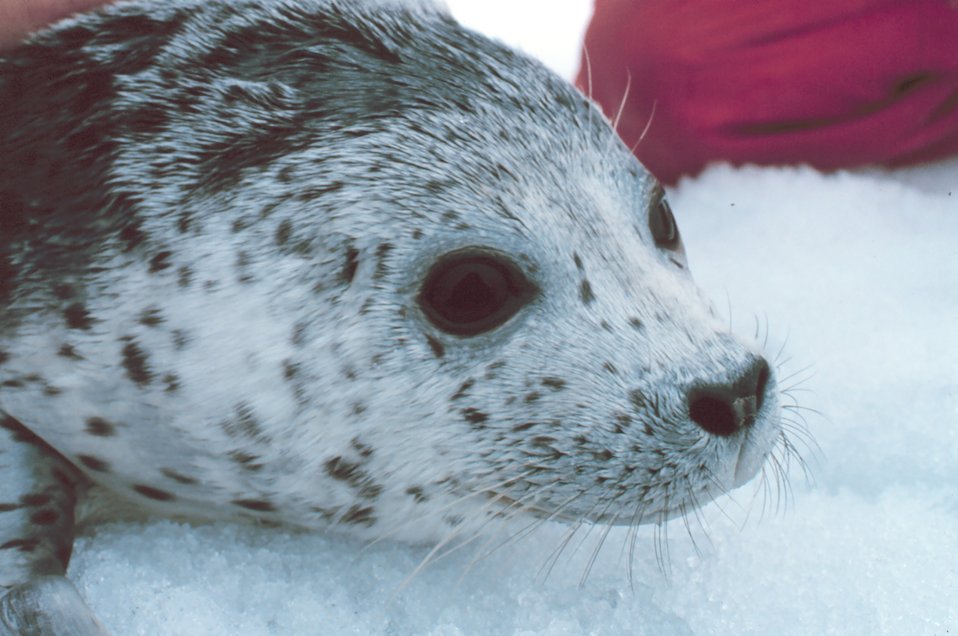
Tagging a spotted seal - Phoca largha.